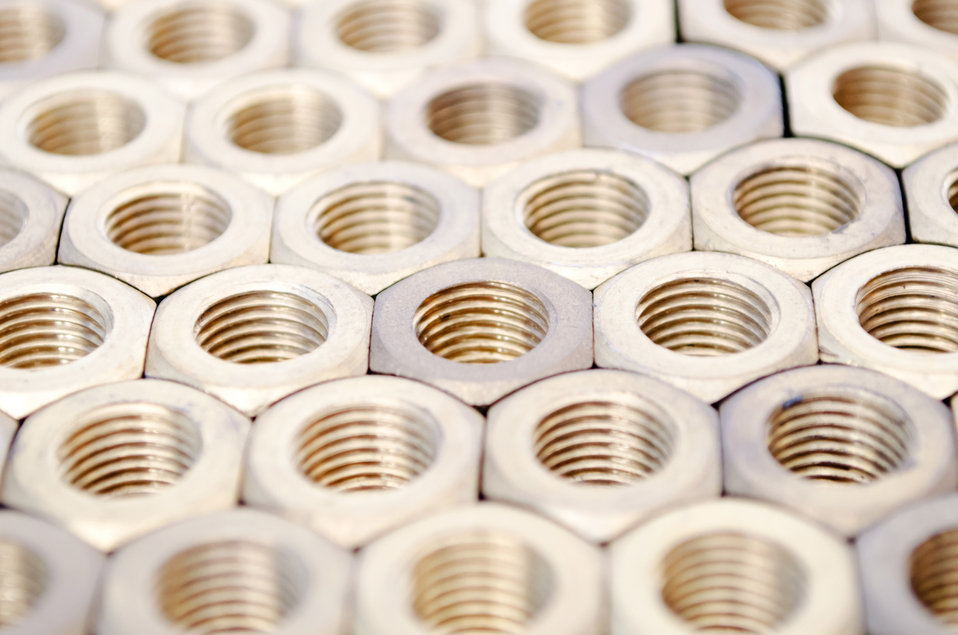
Nut background.